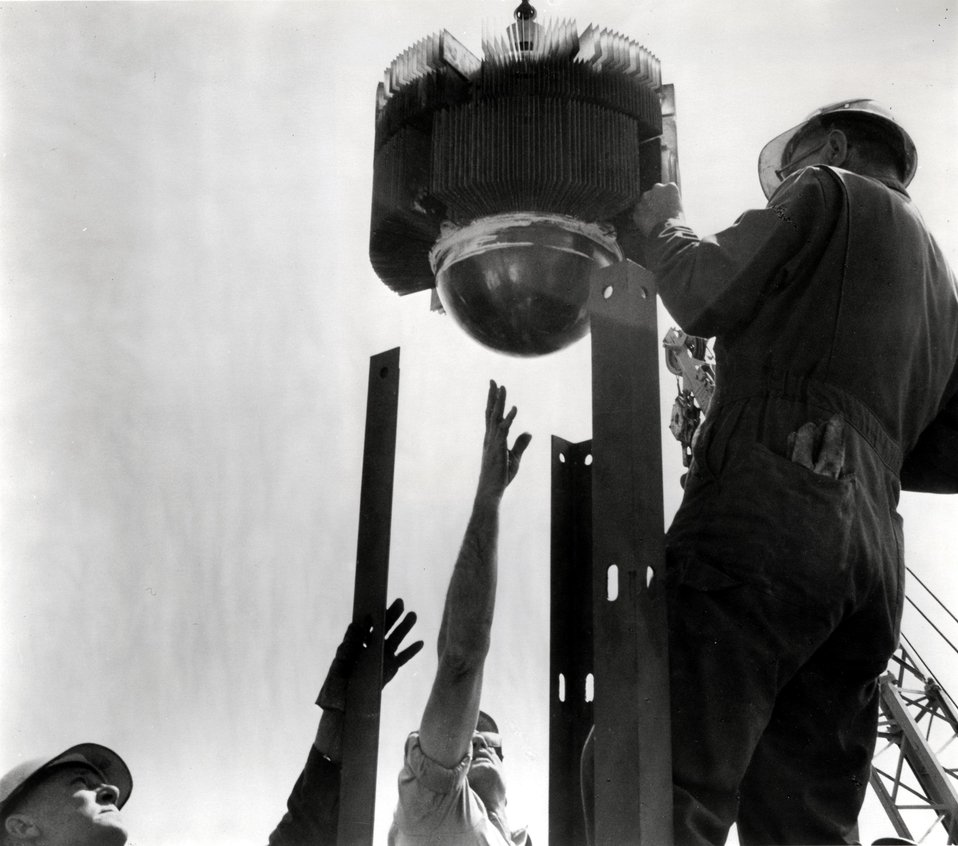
Technicians are shown here readying a nuclear-powered generator (SNAP 21) for extended testing in an ocean environment.